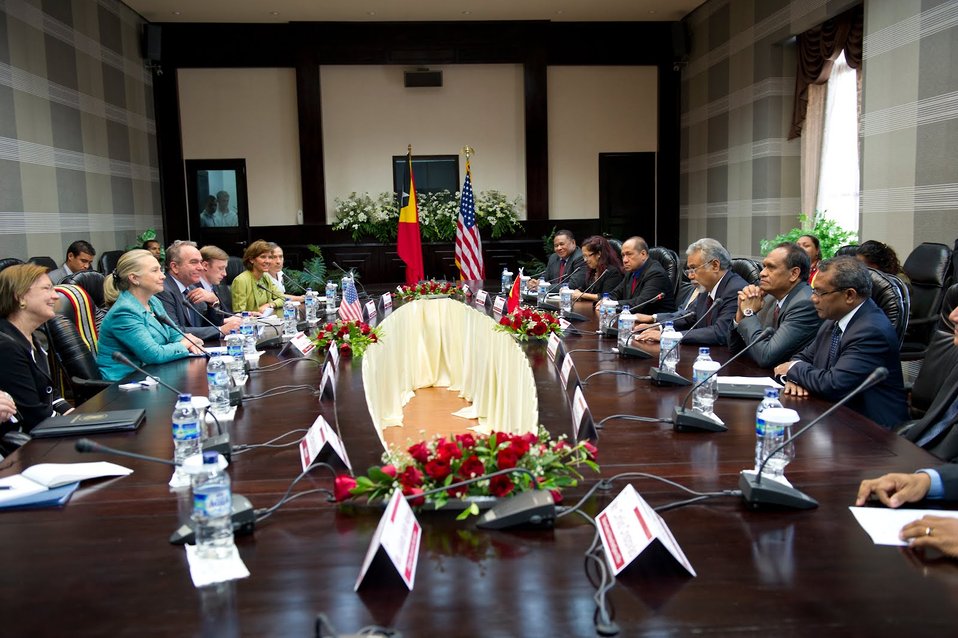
Secretary Clinton Meets With Timor-Leste’s Prime Minister Gusmao

U.S. Secretary of State Hillary Clinton heads the U.S. delegation meeting with Timor-Leste’s Prime Minister Xanana Gusmao and his key advisors in Dili, Timor-Leste, September 6, 2012. Delegation members, from left to right, are U.S. Ambassador to Timor-Leste Judith R. Fergin, Secretary Clinton, Assistant Secretary of State for East Asian and Pacific Affairs Kurt Campbell, Deputy Chief of Staff / Director of Policy, Planning and Jake Sullivan, Ambassador Capricia Marshall, Admiral Harry Harris, Timor-Leste Minister of Education Bendito Freitas, Minister of Finance Emilia Pires, Deputy Prime Minister Fernando Lasama De Araujo, Prime Minister Kay Rala Xanana Gusmao, Foreign Minister Jose Luis Guterres, Vice-Foreign Minister, and former Timor-Leste Ambassador to the U.S. Constancio Pinto.